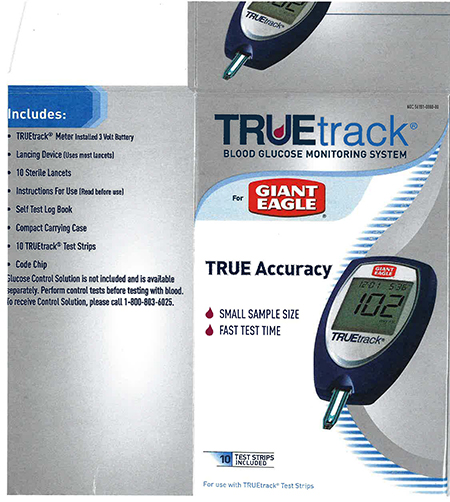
RECALLED – Blood Glucose Meters

January 2, 2014 – Product Recall – Nipro Diagnostics, Inc. Initiates Voluntary Recall of Certain TRUEbalance and TRUEtrack Blood Glucose Meters.